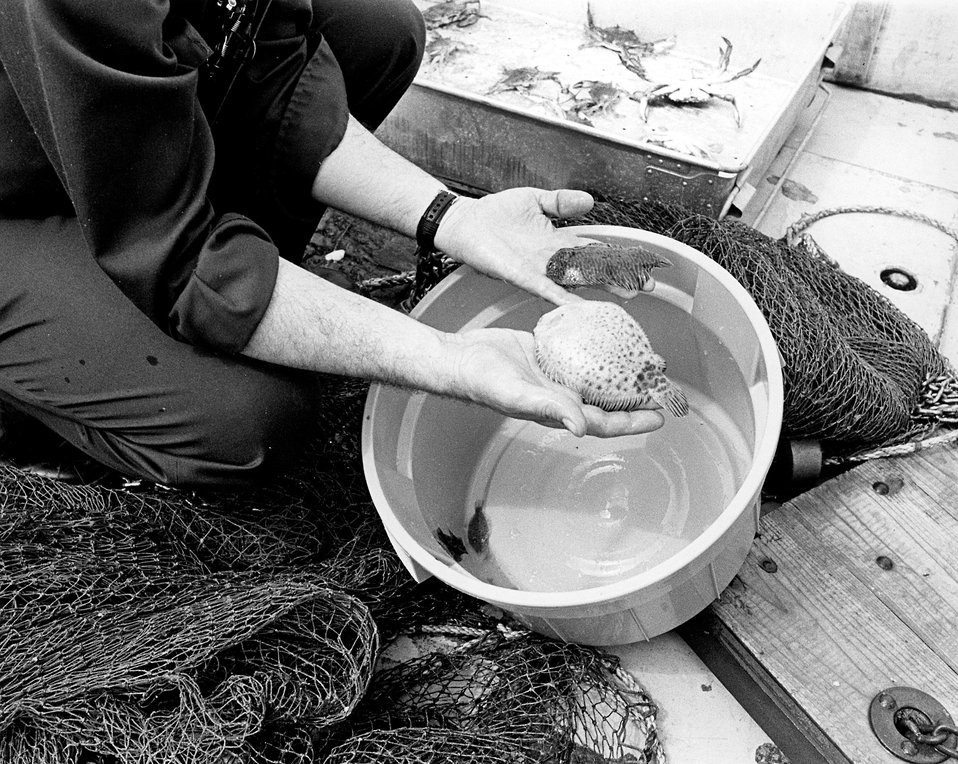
A research scientist from the University of Maryland examines fin fish from the Chesapeake Bay as part of an Atomic Energy Commission research program studying the effects of releasing waste heat into Chesapeake Bay. Circa 1972.